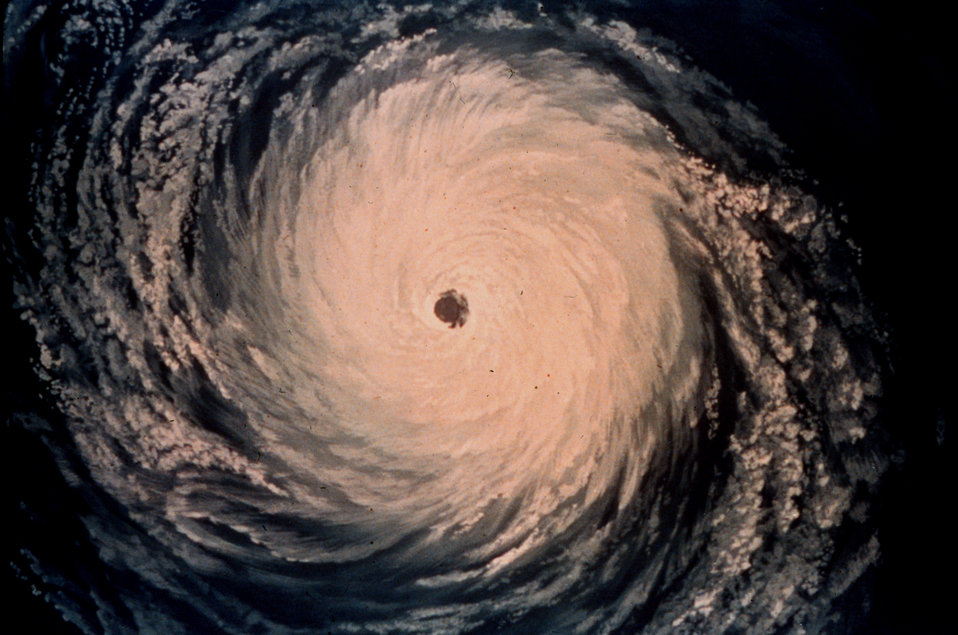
Artist's rendition of a satellite view of a hurricane